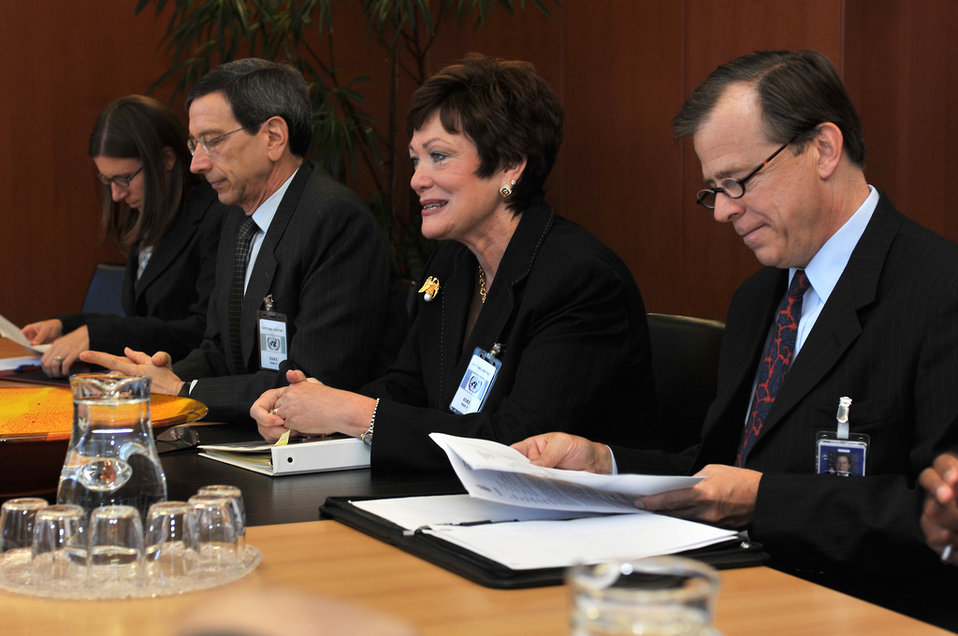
Under Secretary Tauscher, Special Advisor Einhorn, and Ambassador Davies Meet With IAEA Director General Amano

Ellen Tauscher, Under Secretary of State for Arms Control and International Security Affairs, Robert Einhorn, U.S. Special Advisor for Nonproliferation and Arms Control, and Glyn Davies, Permanent Representative of the United States to the International Atomic Energy Agency and the United Nations Office in Vienna, meet with IAEA Director General Yukiya Amano at the IAEA’s headquarters in Vienna, Austria, on June 15, 2011.